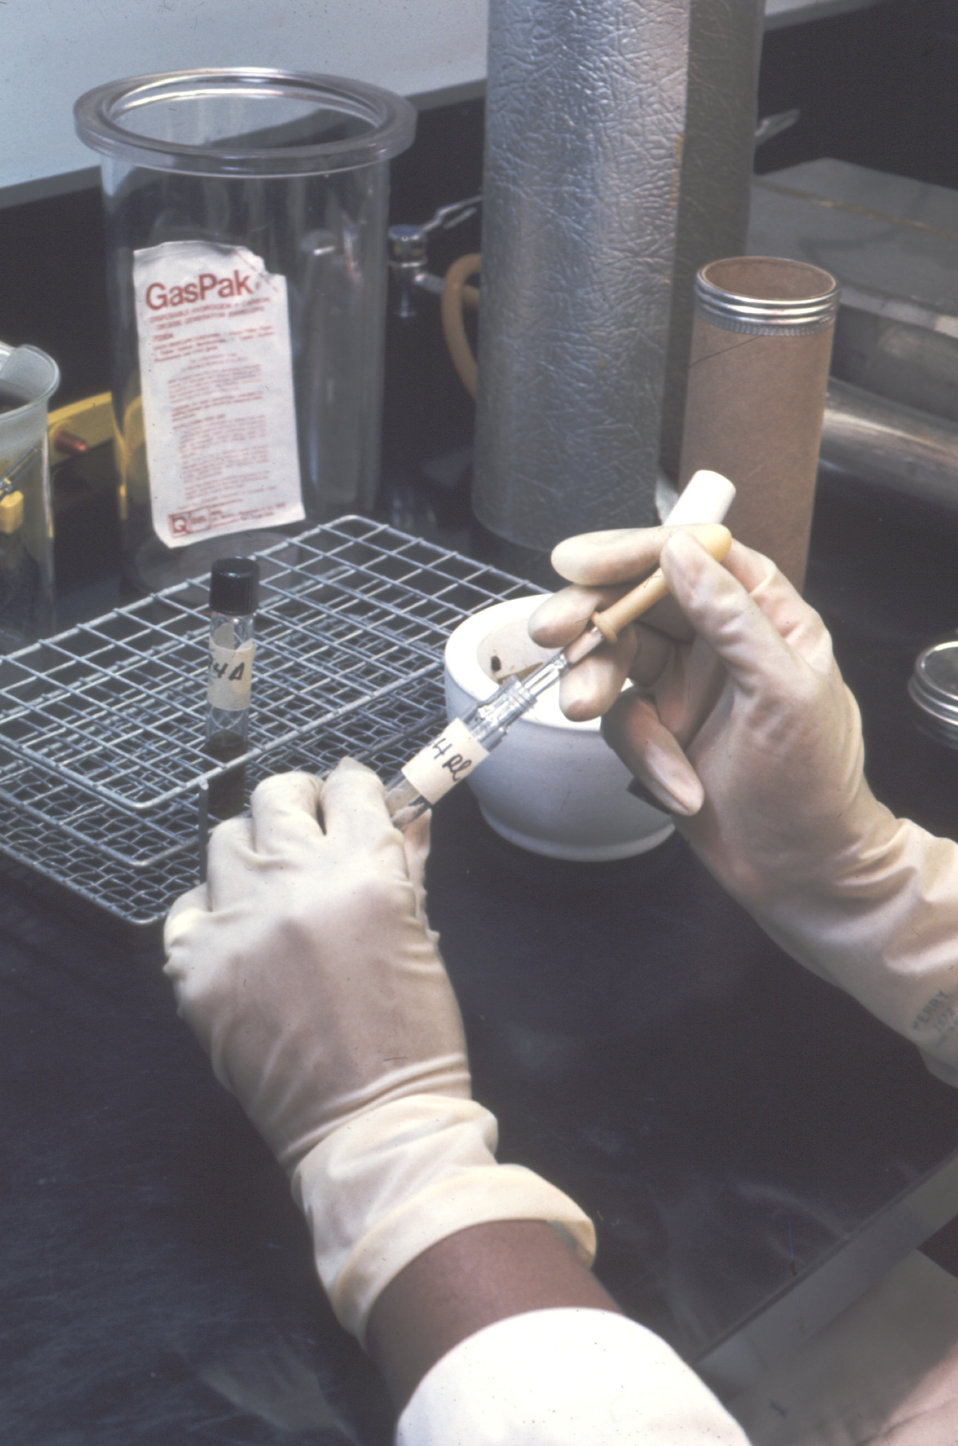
This laboratorian is testing for the confirmation of botulism toxin.